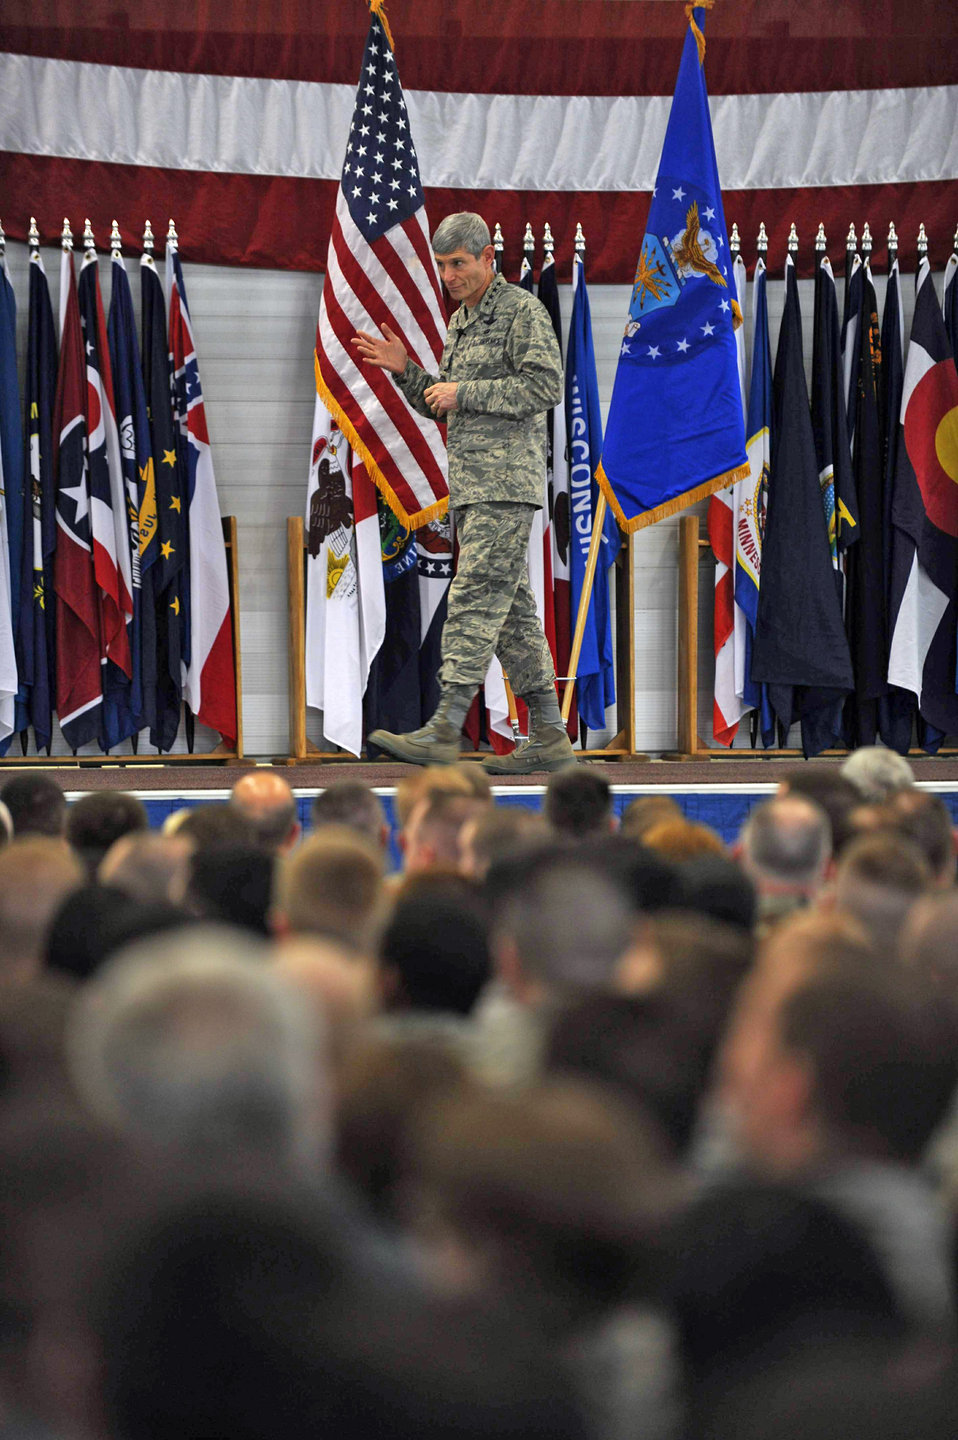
Chief of staff: Minot Airmen key to Air Force mission

Gen. Norton Schwartz addresses more than 1,500 Airmen on teamwork and excellence April 1, 2010, at Minot Air Force Base N.D.